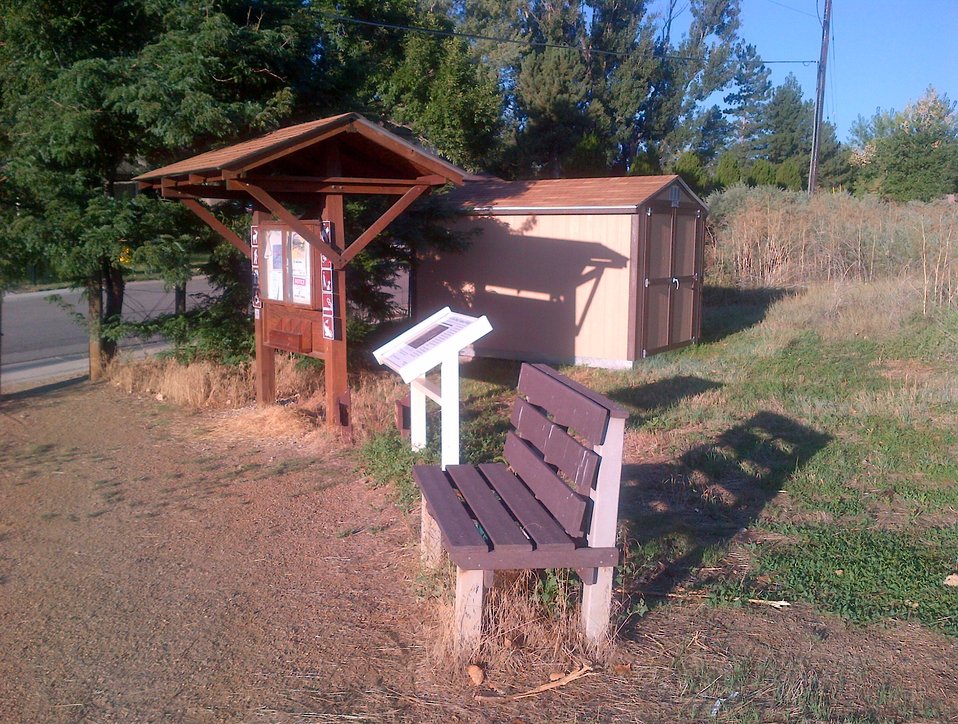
Shed - West